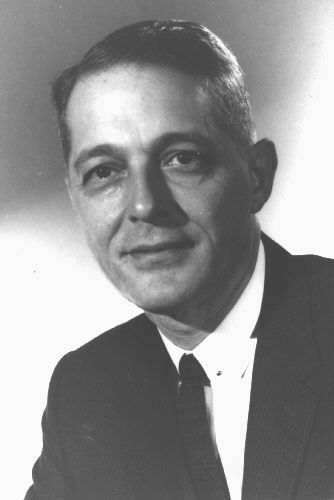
Clarence A. Smith, M.D., M.P.H., CDC Chief